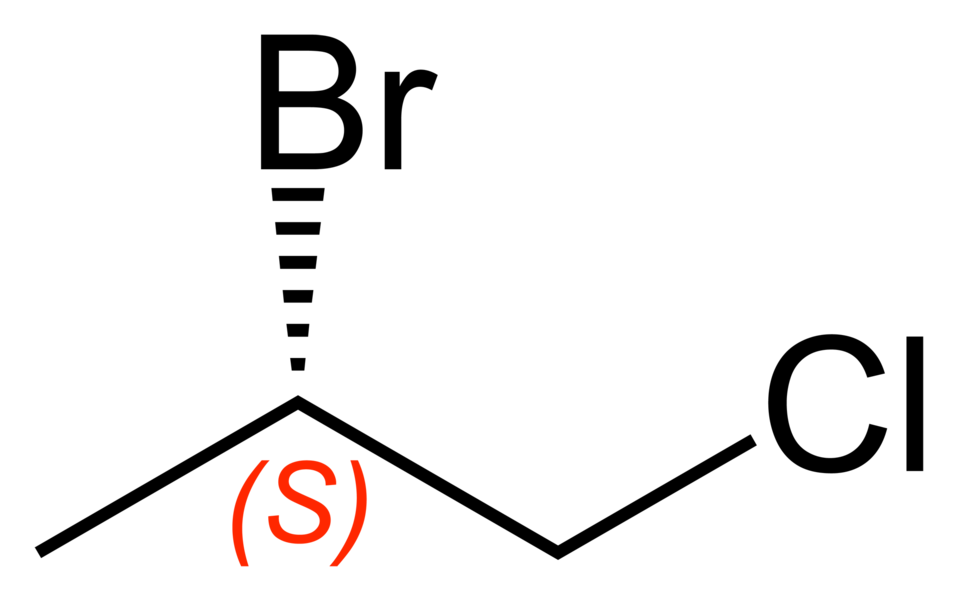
Skeletal formula of the S enantiomer of the 2-bromo-1-chloropropane molecule, C3H6BrCl.